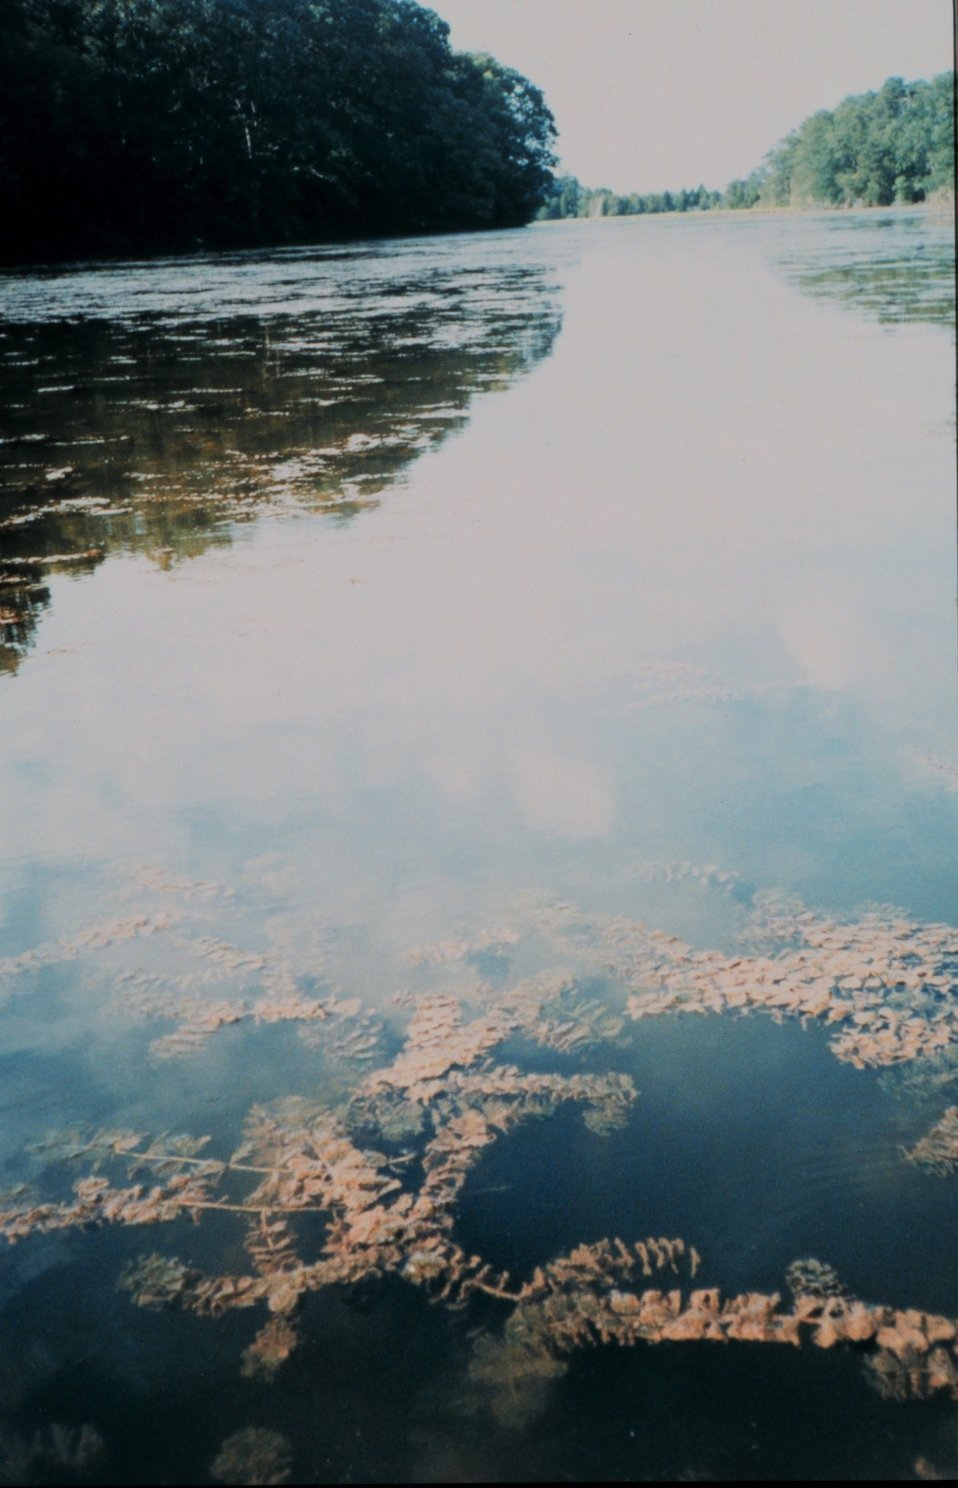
Back finger of a tidal pond full of the submerged aquatic vegetation (SAV) Eurasian watermilfoil.